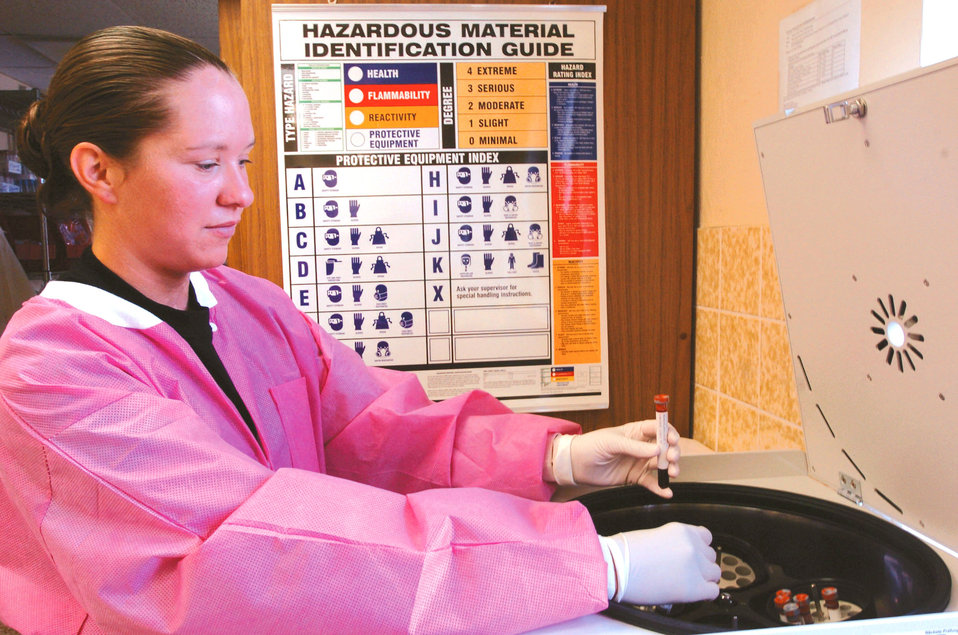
A closer look

SPANGDAHLEM AIR BASE, Germany -- Senior Airman Jennifer Attridge prepares blood samples for shipment to the Bitburg Annex and Landstuhl Regional Medical Center. During urinalysis, lab technicians can check for red and white blood cells, bacteria, yeast, mucus and epithelial cells. The technicians assist physician's assistants and nurses diagnosing potential illnesses. Airman Attridge is assigned to the 52nd Medical Support Squadron.